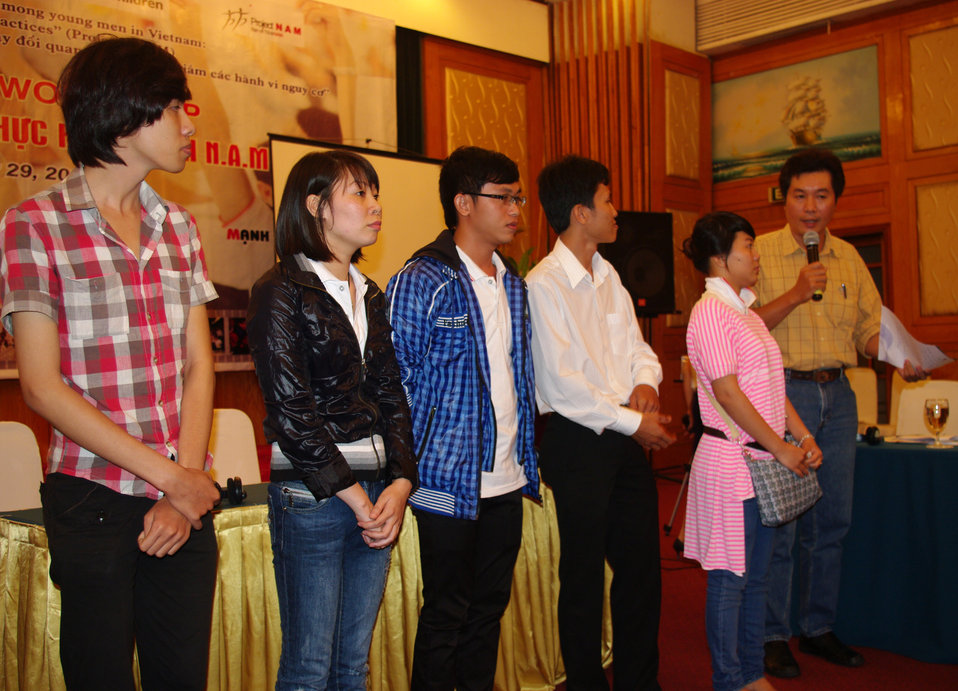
USAID Supports HIV Awareness among Street Youth and Young Men

Trainers and peer educators tell their stories on November 29, 2011, in Hanoi, Vietnam